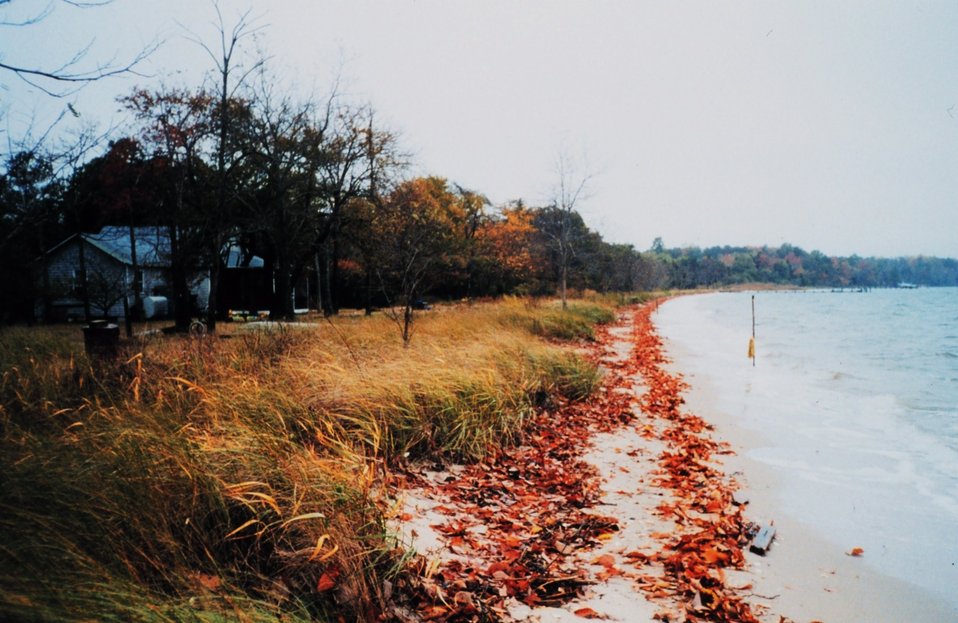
A fall high tide along a Patuxent River beach